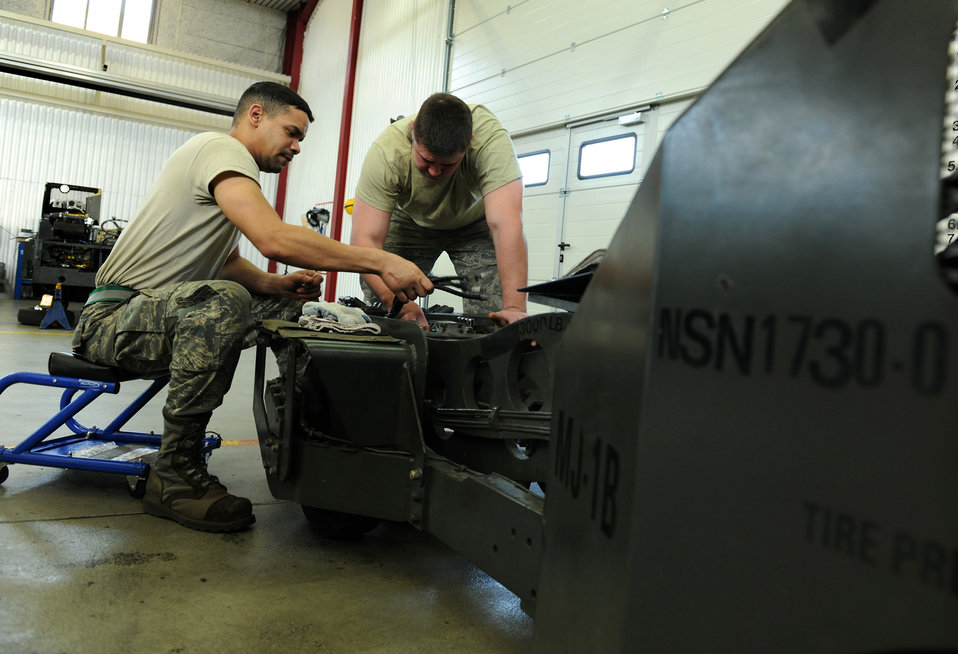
Working on a bomb lift

Airman 1st Class Gary Hutchison (left) and Senior Airman Blake Skaggs prepare to remove a directional control valve from a bomb lift April 7, 2011, at Spangdahlem Air Base, Germany. Both Airmen are assigned to the 52nd Equipment Maintenance Squadron as aerospace ground equipment journeymen.